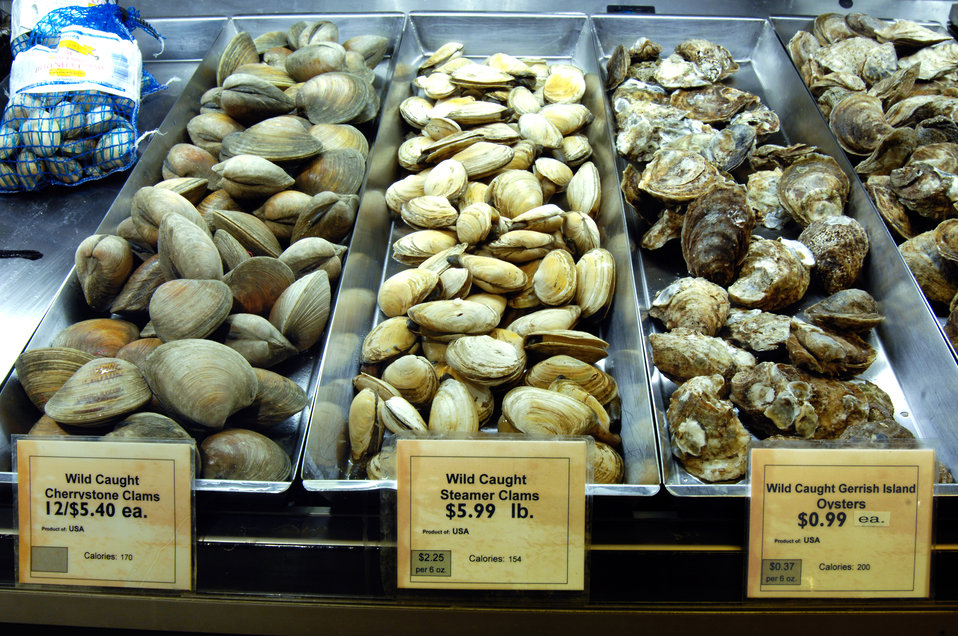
Shellfish sold at Wegman’s Supermarket in Fredericksburg, Virginia on September 1, 2009 displays the required Country of Origin Label (COOL). COOL is a labeling law that requires retailer, such as full-line grocery stores, supermarkets, and club warehouse stores to notify their customers with information regarding the source of certain foods. Food products and covered commodities contained in the law include muscle cut and ground meats of beef, veal, pork, lamb, goat, and chicken; wild and farm-raised fish and shellfish; fresh and frozen fruits and vegetables; peanuts, pecans, and macadamia nuts; and ginseng. The U.S. Department of Agriculture (USDA) Agricultural Marketing Service (AMS) is responsible for the administration and enforcement of COOL.